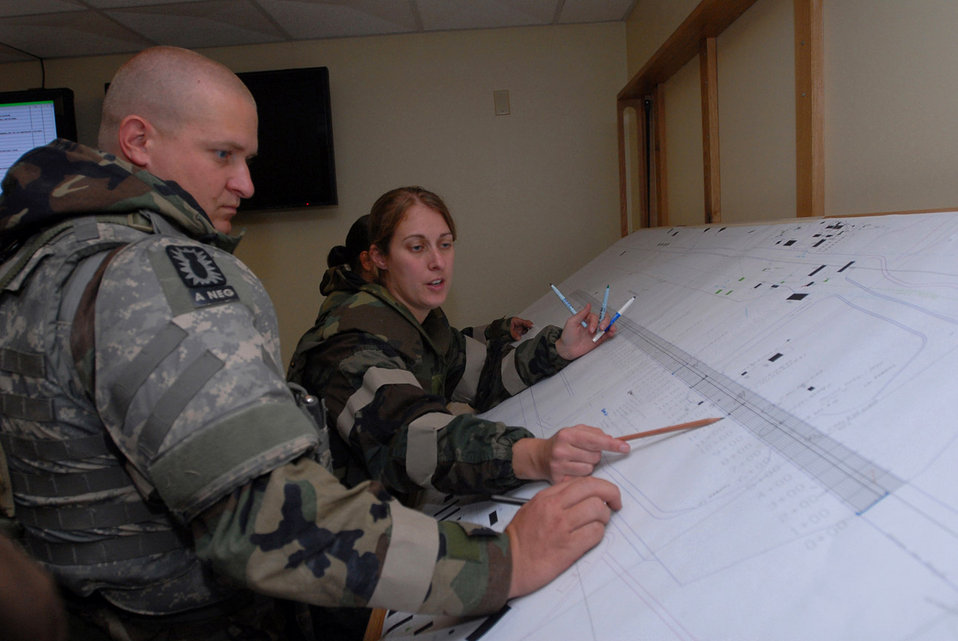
Airmen practice runway repair, RAAF airmen observe, take ideas home

Staff Sgt. Rachael Bonafede and Tech. Sgt. Ronald White, 36th Civil Engineer Squadron, mark craters on an airfield map at Kadena Air Base, Japan, Nov. 16. Approximately 110 personnel, most from the 36th CES out of Andersen Air Force Base, Guam, attended the Det. 1, 554th Rapid Engineer Deployable Heavy Operational Repair Squadron Engineer Silver Flag exercise here.